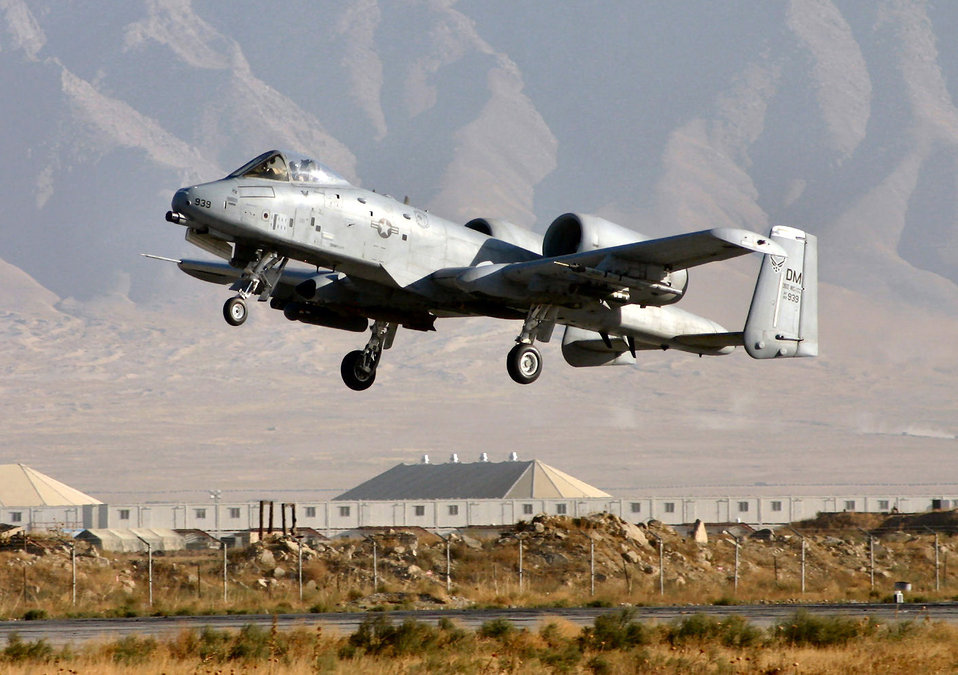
Thunderbolts on patrol

BAGRAM AIR BASE, Afghanistan -- An A-10 Thunderbolt II takes off on a combat mission. Since Sept. 15, A-10s here have flown more than 1,700 sorties in support of Operation Enduring Freedom. The A-10 was the first Air Force aircraft specially designed for close air support of ground forces.